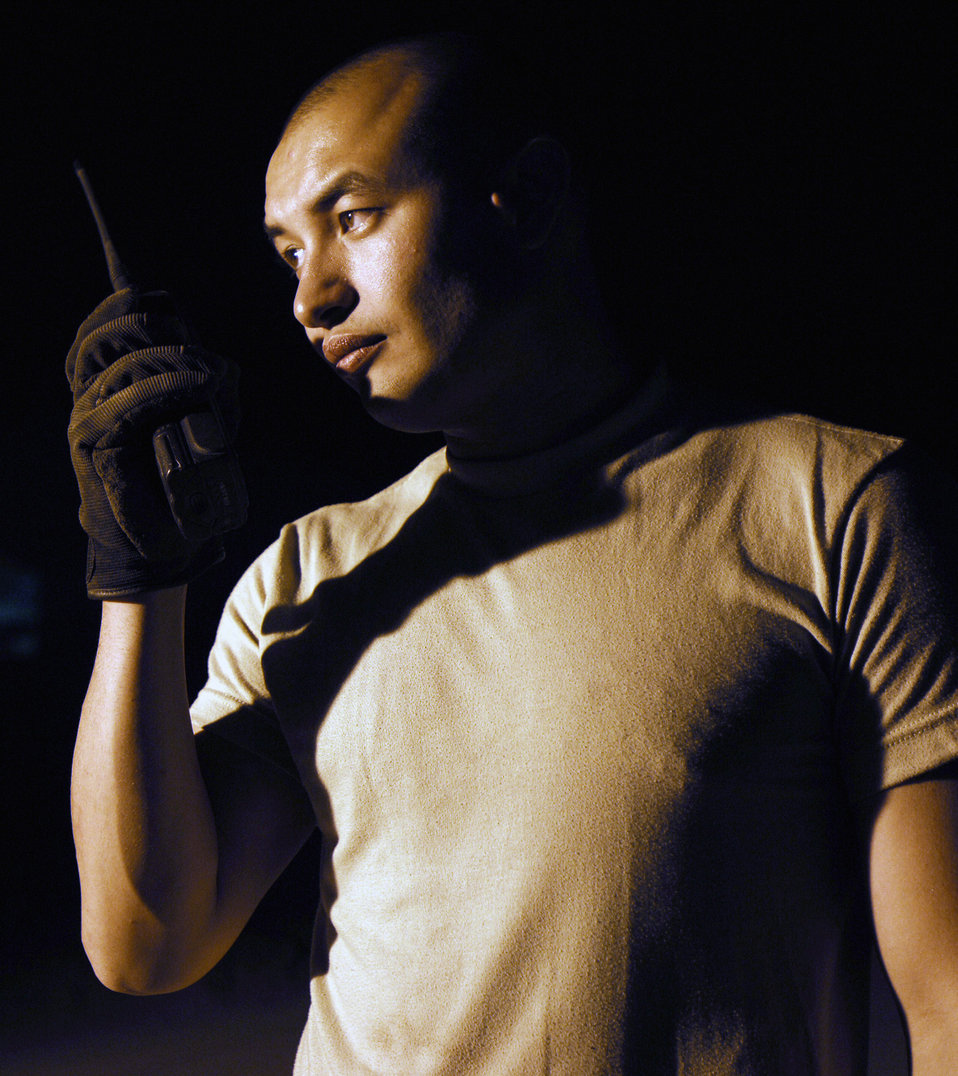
Lurking in the shadows

Senior Airman Fred Cruz communicates with his unit using a land mobile radio at Joint Base Balad, Iraq, Sept. 24. Airman Cruz is an aerospace ground equipment journeyman with the 332nd Expeditionary Maintenance Squadron and deployed from Shaw Air Force Base, S.C. His hometown is Sonora, Calif.